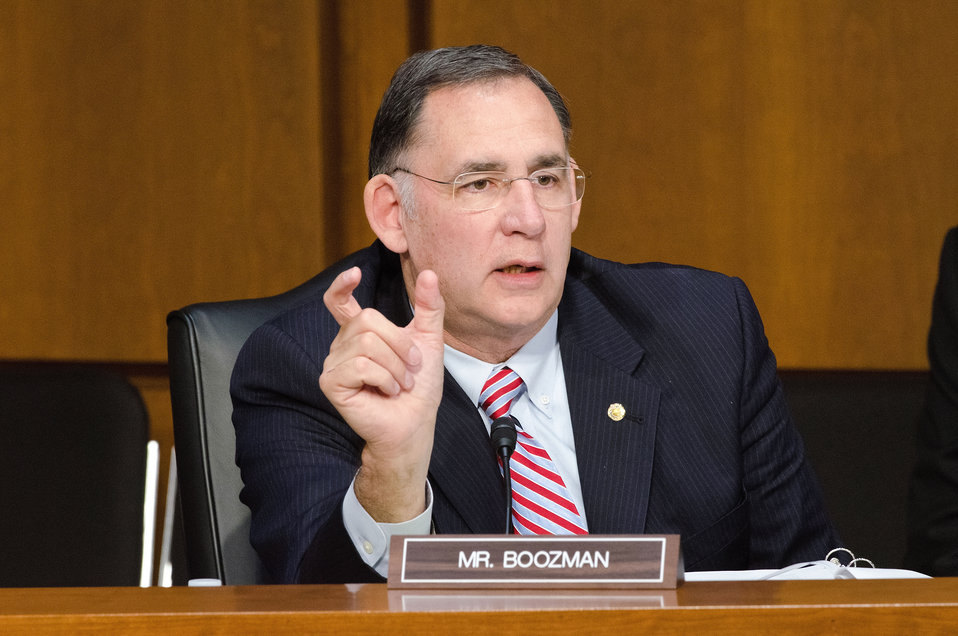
Senator John Boozman (AR) poses a question to Agriculture Secretary Tom Vilsack during Secretary Vilsack’s testimony on “Healthy Food Initiatives, Local Production and Nutrition,” before the Senate Agriculture Committee on Wednesday, March 7, 2012 in Washington, D.C.